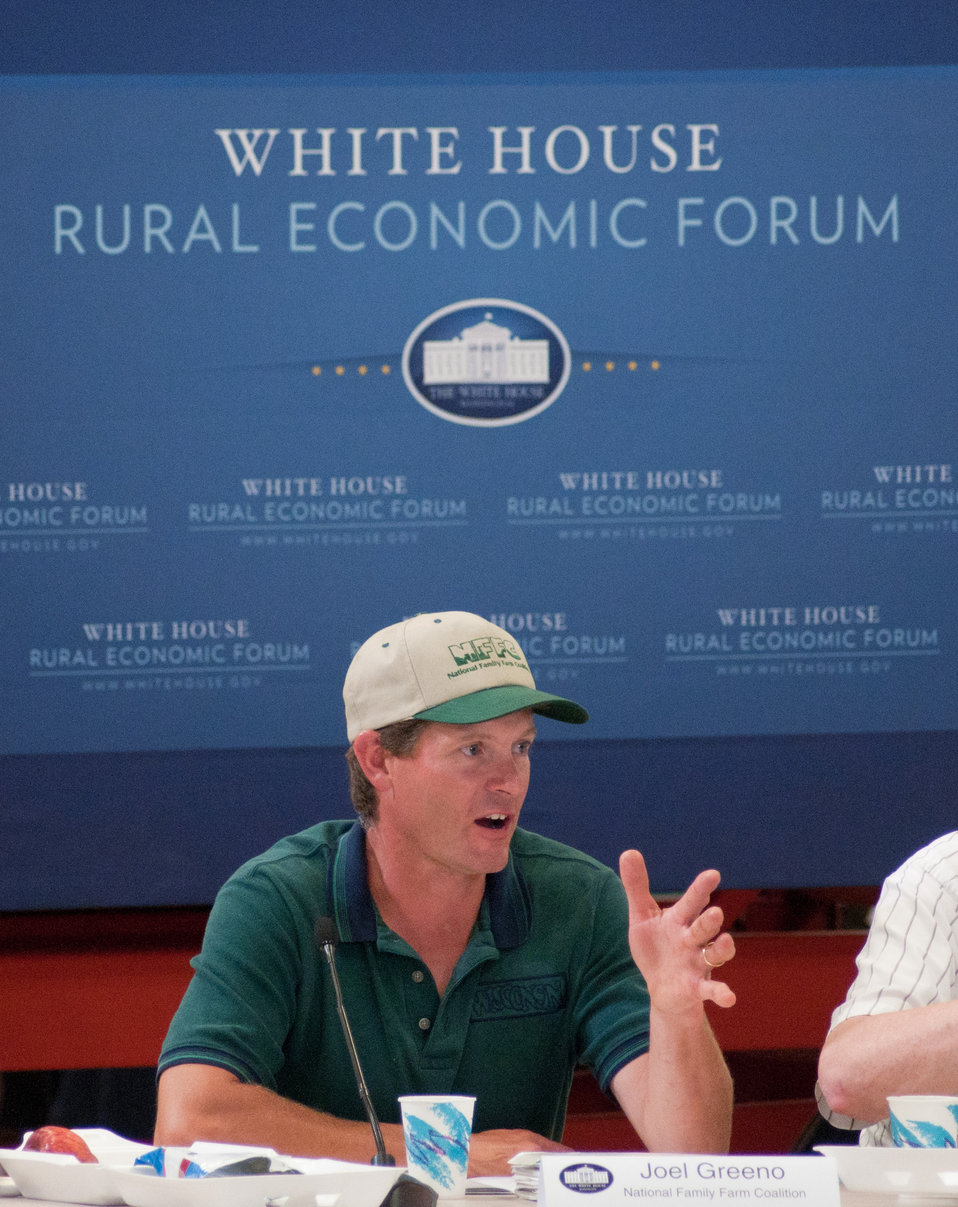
National Family Farm Coalition’s Joel Greeno speaks to U.S. Department of Agriculture Secretary and chair of the White House Rural Council, Tom Vilsack, and other stakeholders, during a meeting at the Northeast Iowa Community College, IA, for the White House Rural Economic Forum, on Tuesday, August 16, 2011.